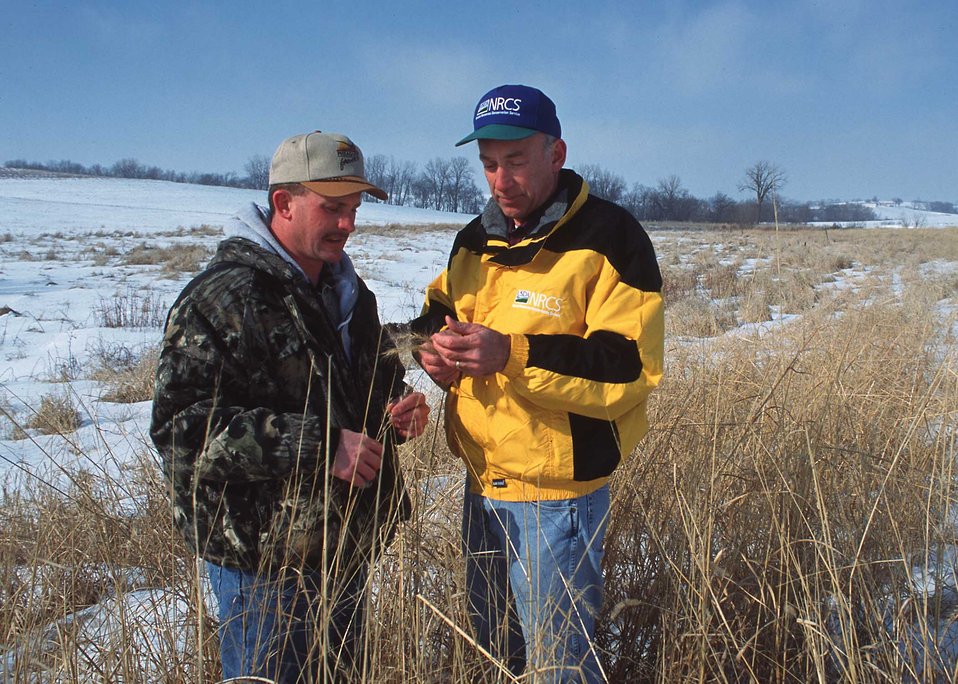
An NRCS District Conservationist and a Cass County, Iowa landowner discuss wildlife habitat plantings on the farm.